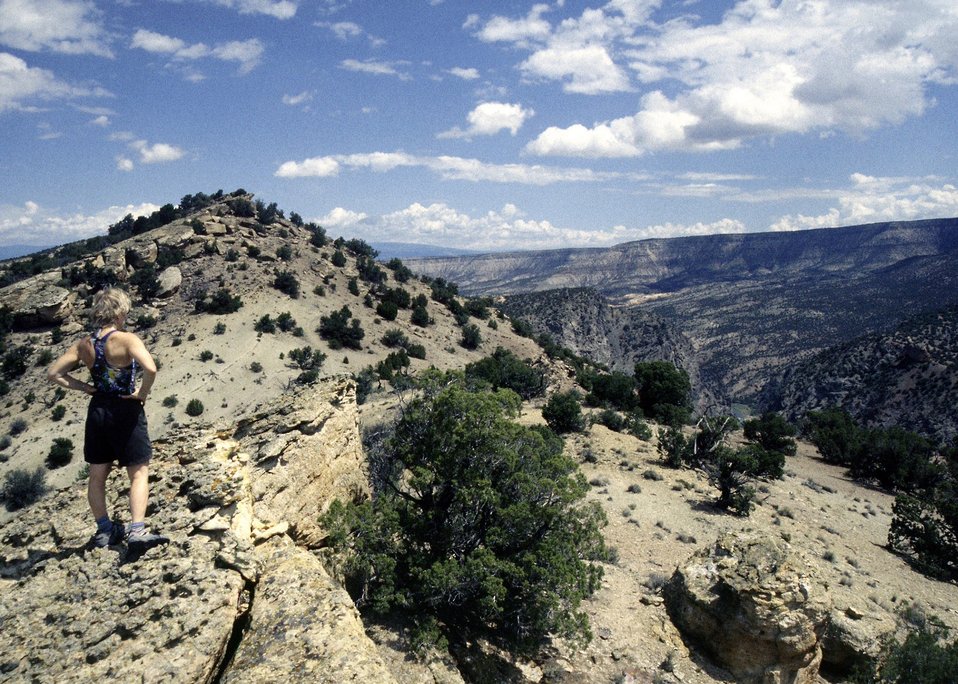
Hiking